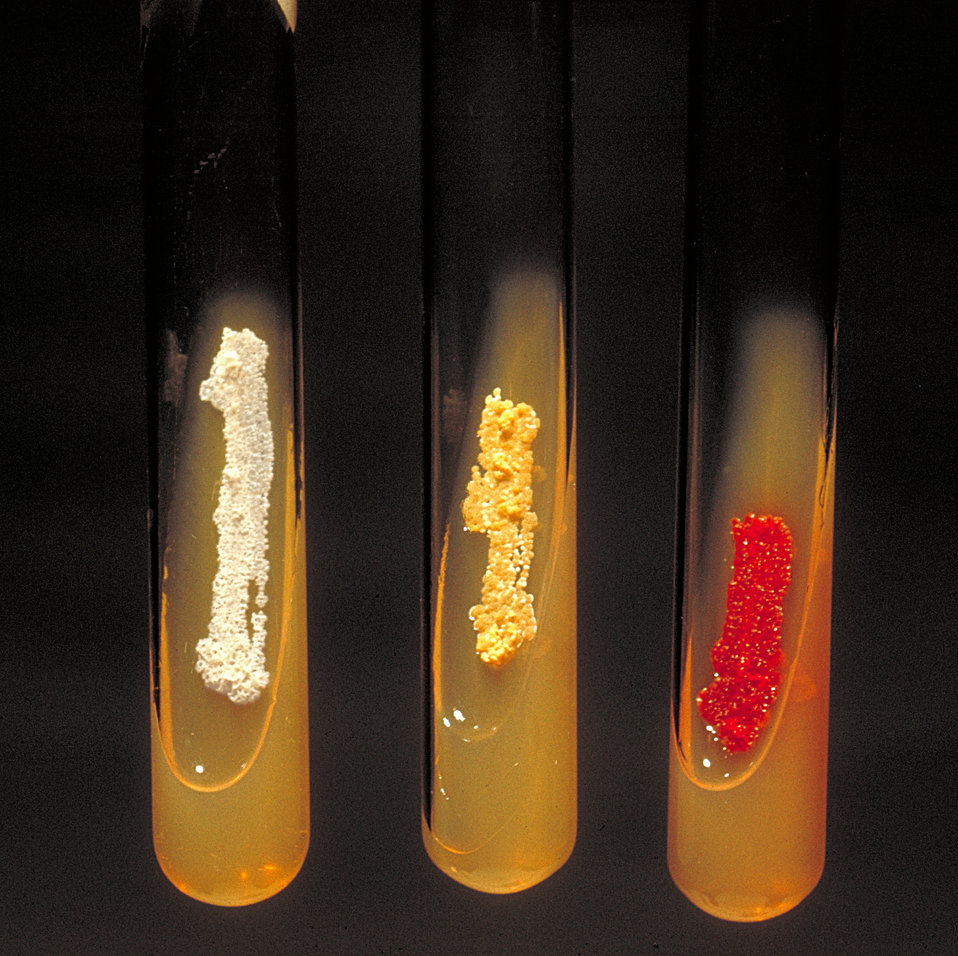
These slant cultures demonstrate the variations in colonial appearance among aerobic Actinomycetes spp..